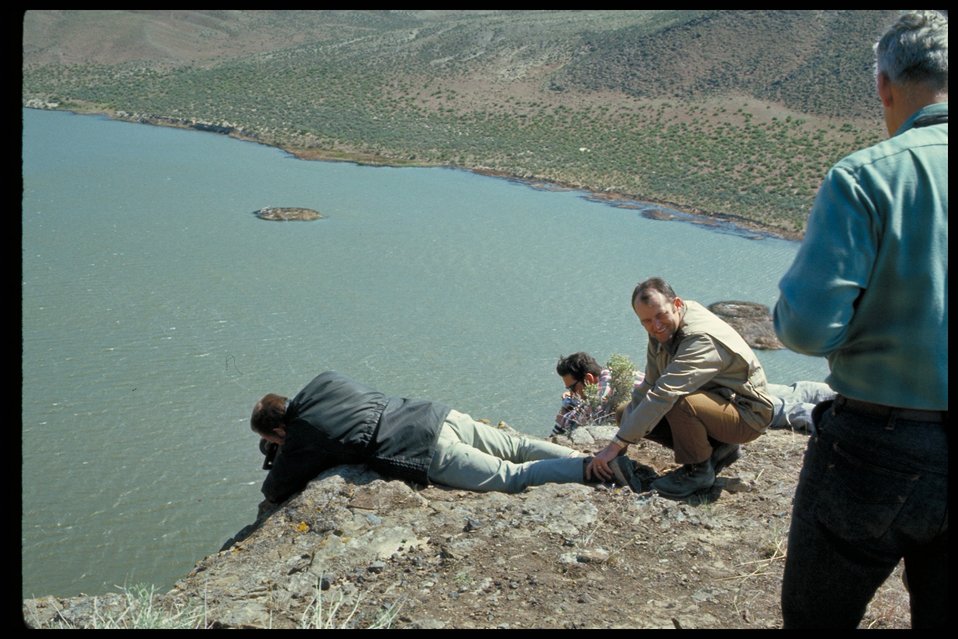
Taking photos of Eagle nest Swan Falls Birds of Prey National Conservation Area BOP Owyhee Field Office LSRD Lower Snake River District